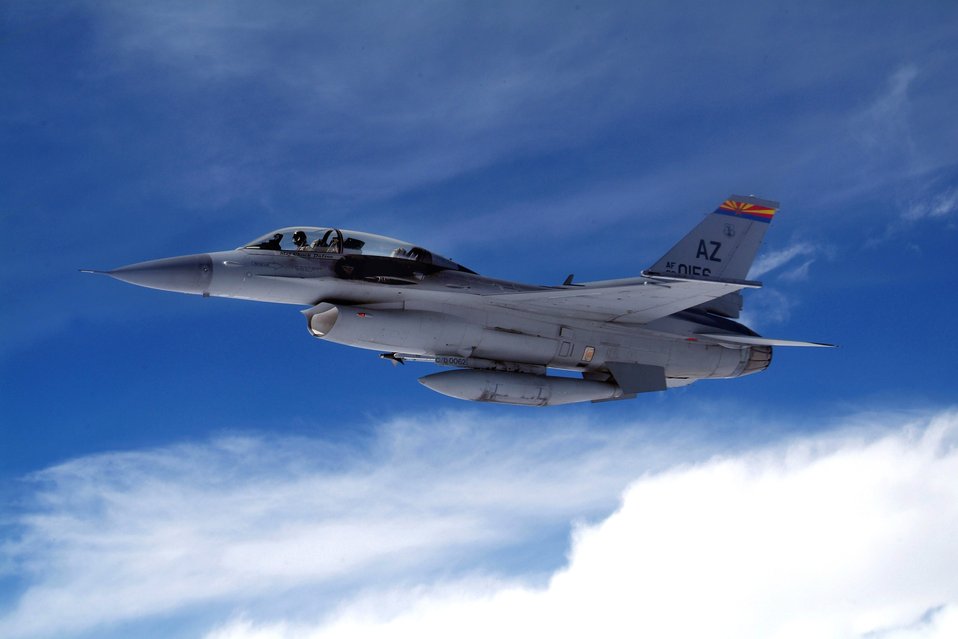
CAP cadets soar on incentive flight

An F-16 Fighting Falcon flies alongside a KC-135 Stratotanker during an incentive flight for students in the Civil Air Patrol and Aviation Careers Education Camp in Phoenix on Aug. 1. The camp was held in conjunction with the Tuskeegee Airmen Convention. The aircraft are with the Arizona Air National Guard.